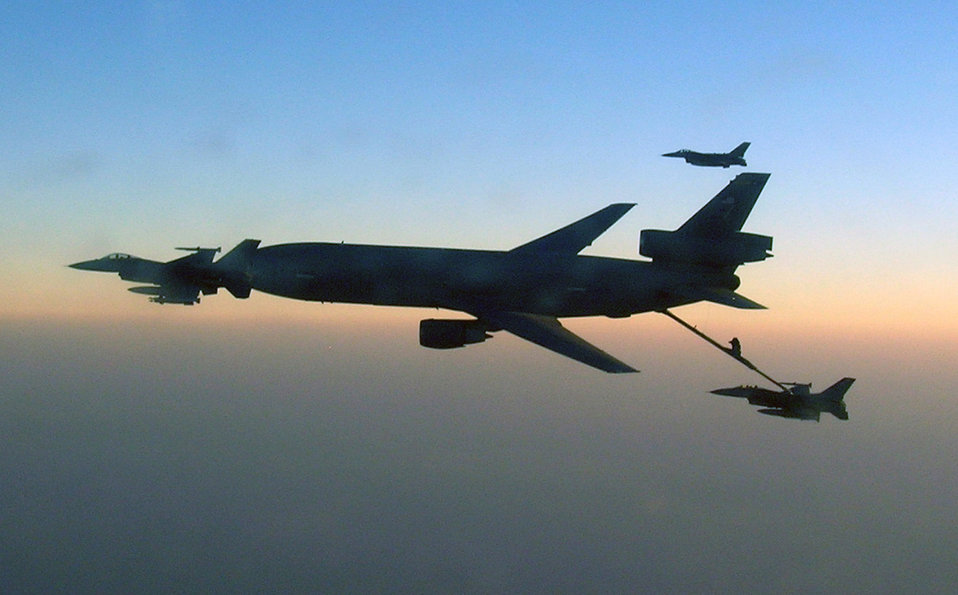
Combat air refueling over Afghanistan

A KC-10 Extender from the 908th Expeditionary Air Refueling Squadron refuels F-16 Fighting Falcons Feb. 1, 2010, over Afghanistan, during Operation Enduring Freedom air refueling operations in February 2010.